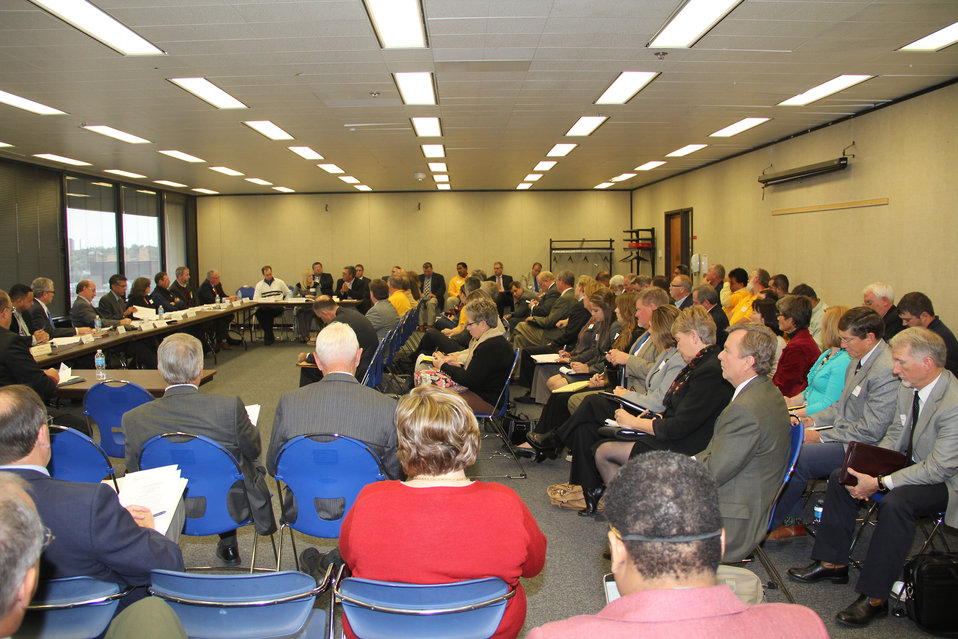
A breakout session at the Federal Drought Workshop in Omaha, NE focuses on the impact of the drought on livestock producers and the changes and adaptations of the animal industry on Tuesday, Oct. 9, 2012. The U.S. Department of Agriculture (USDA) is partnering with local, state and federal partners to hold the workshops, working closely with the Department of Commerce, the Small Business Administration and the Federal Emergency Management Agency to facilitate these meetings.